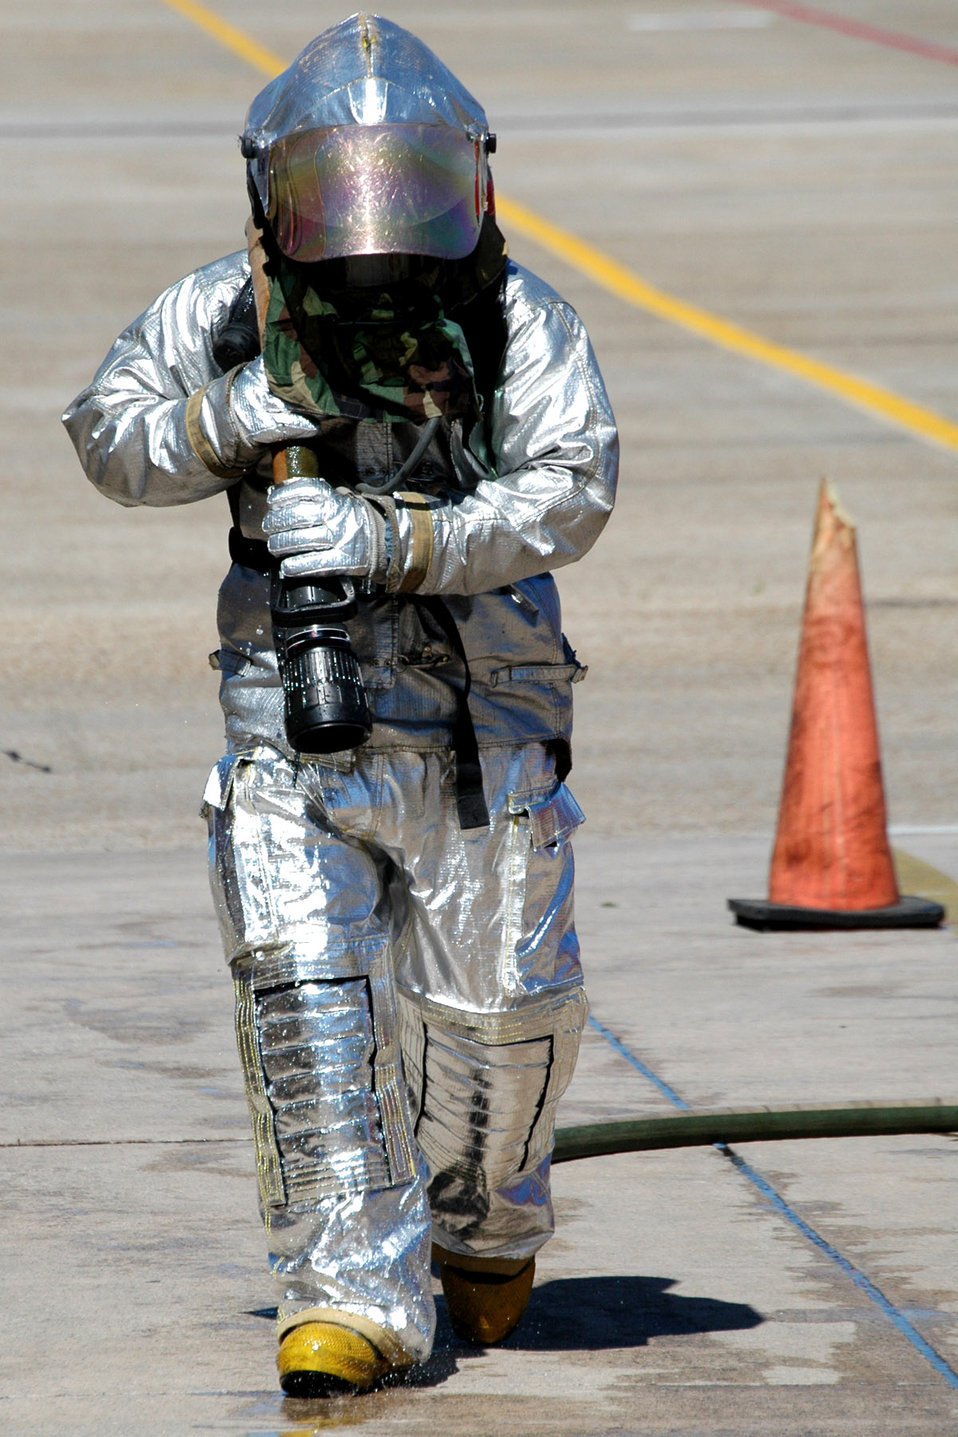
Firefighters test gear for Air Force

Senior Airman Stephen Finkenhoefer drags a hose while testing the Air Force's new firefighter protective suit at Eglin Air Force Base, Fla. He is a firefighter with Eglin's 96th Civil Engineer Squadron.